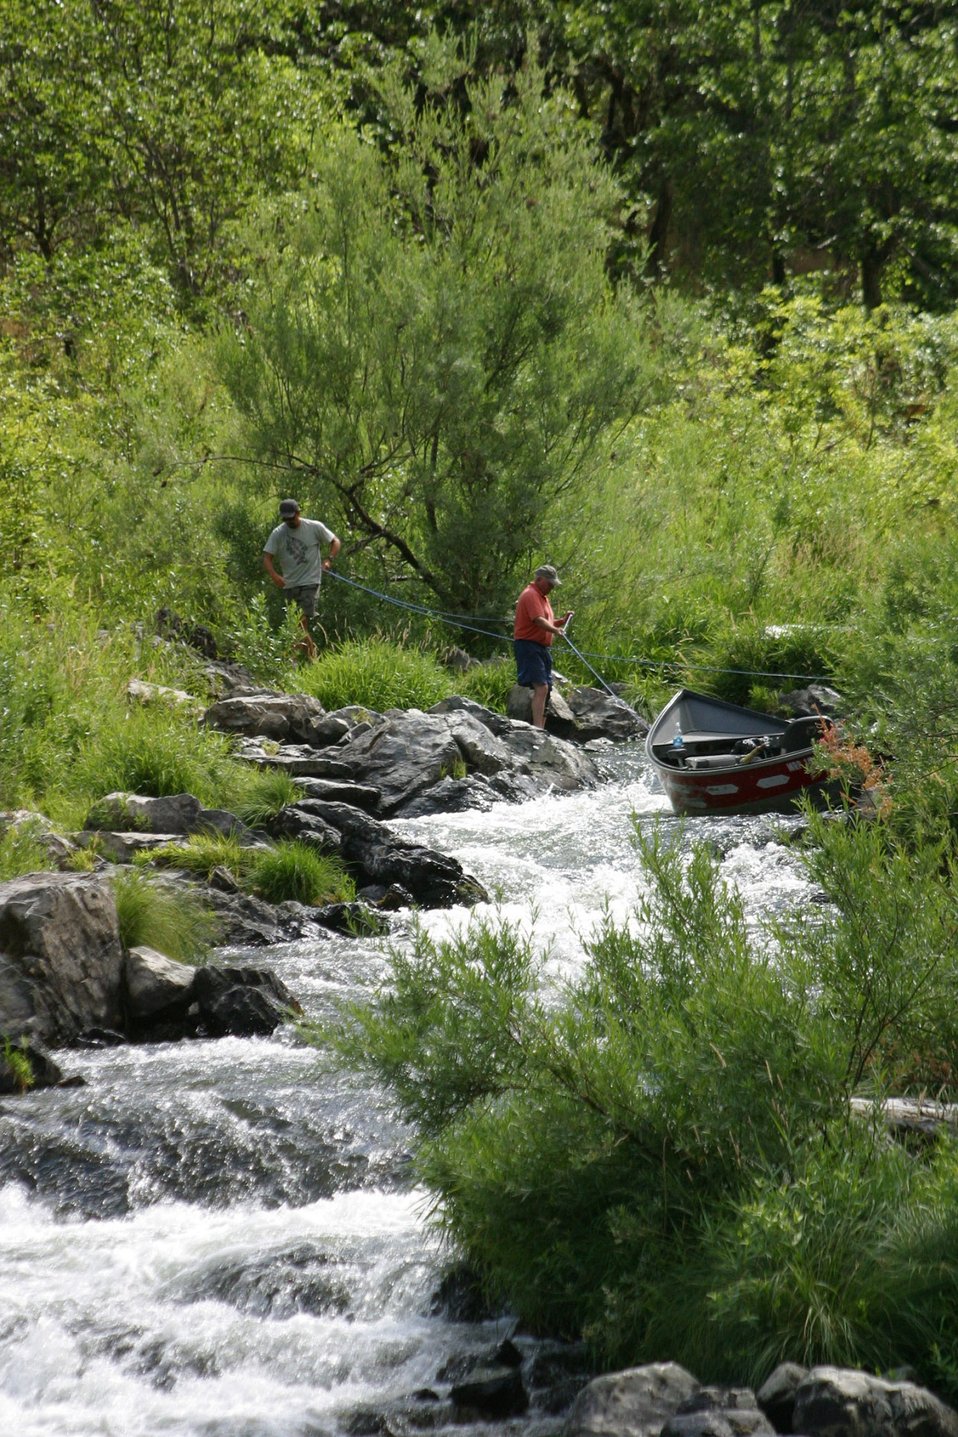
Rainie Falls Fish Ladder